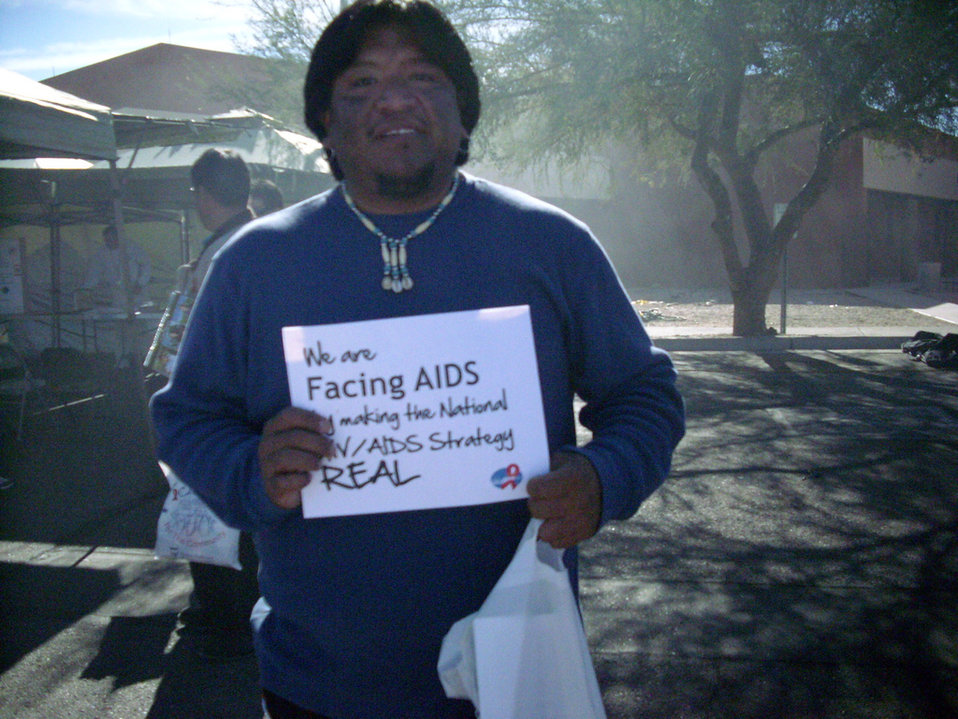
We are Facing AIDS through NHAS-11